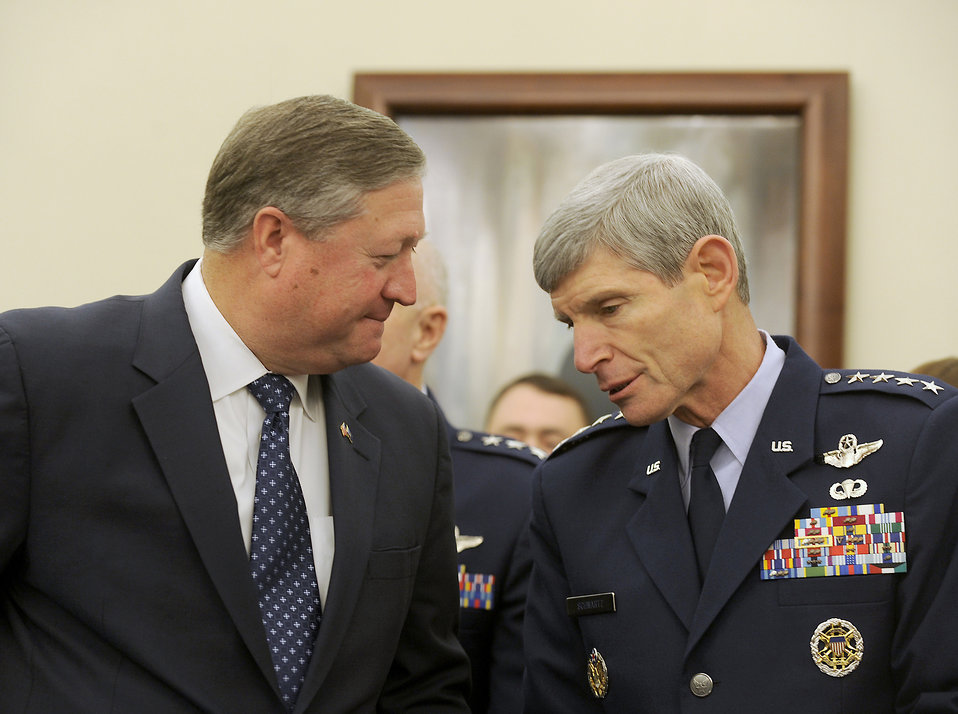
SecAF and CSAF during budget hearing

Secretary of the Air Force Michael Donley and Air Force Chief of Staff Gen.
Norton Schwartz talk prior to an Air Force budget hearing before the U.S.
House Appropriations Subcommittee on Defense on March 6, 2012, in Washington, D.C.